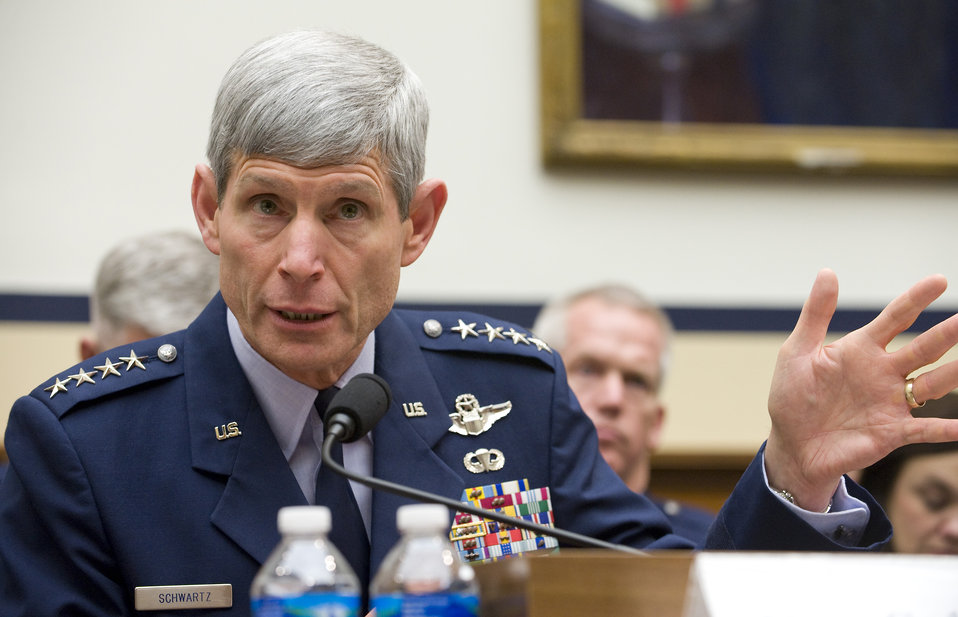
Air Force Budget Proposal to the House Armed Services Committee

Air Force Chief of Staff Gen. Norton Schwartz answers a question on the Air Force's fiscal 2012 budget proposal during a House Armed Services Committee hearing Feb. 17, 2011, in Washington, D.C.